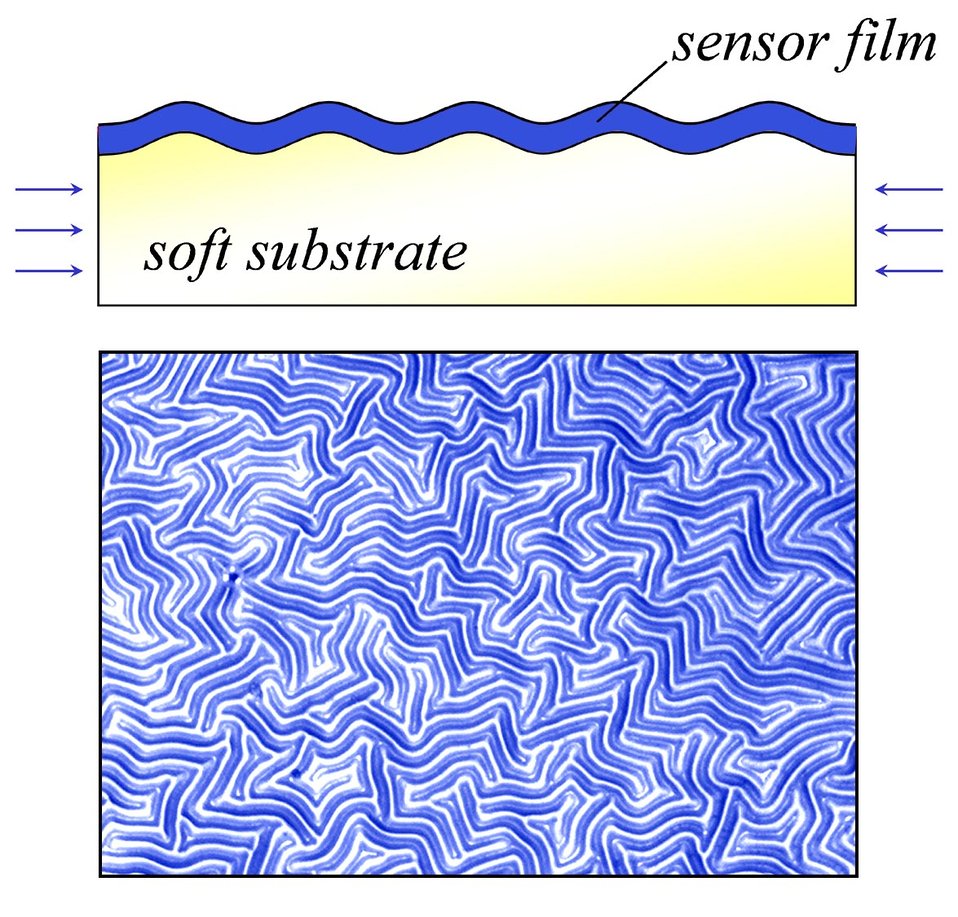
Measuring Stiffness of Soft Polymers

NIST researchers developed a new high-speed method for measuring the stiffness of soft-polymer materials like those used in contact lenses. The test material is covered with a sensor film, and the combination is compressed until it buckles. The resulting pattern of ridges is the key to determining stiffness, an important material property.